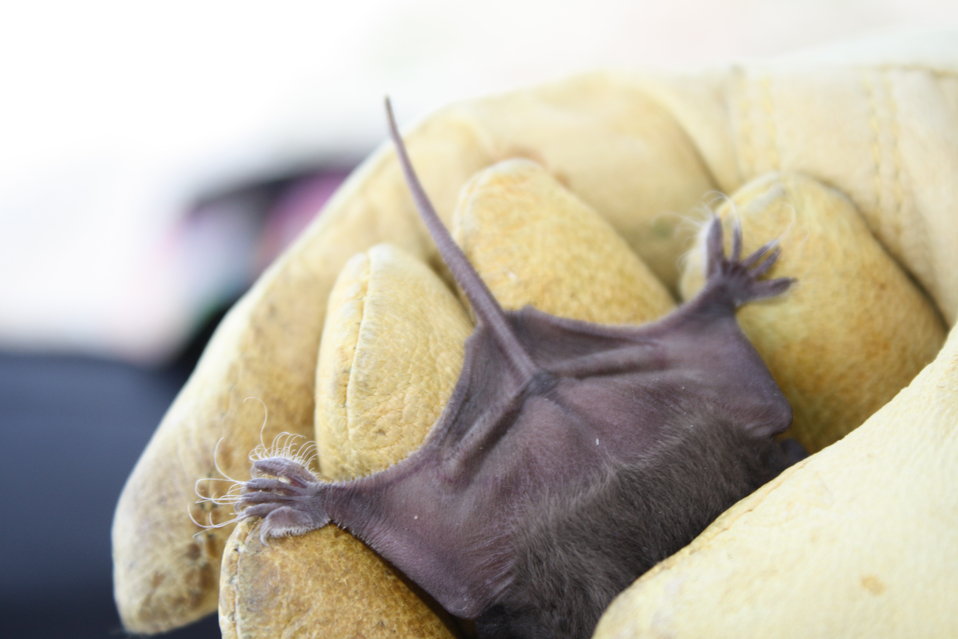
Mexican free-tailed bat (Tadaria braziliensis)